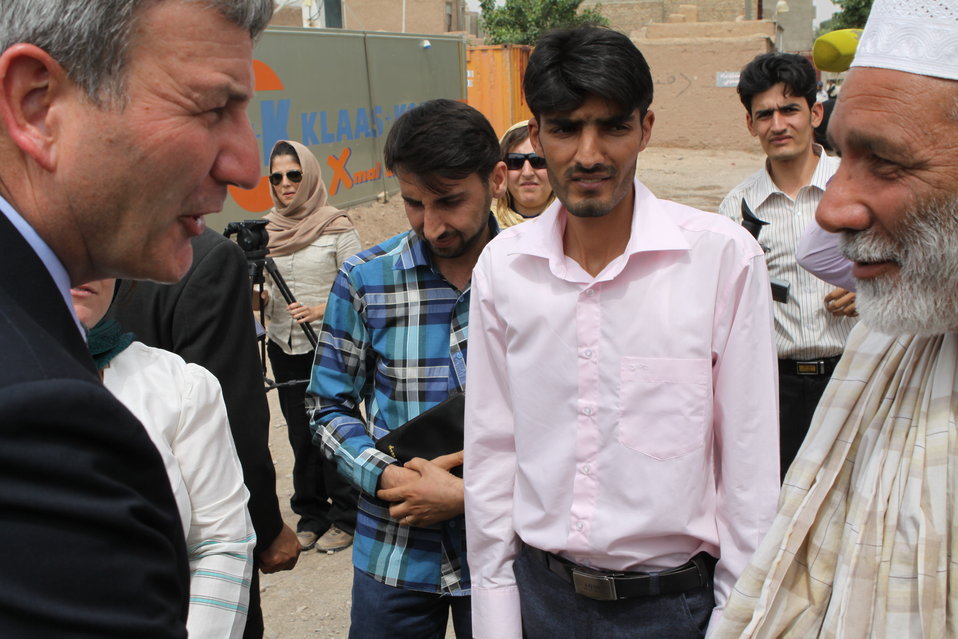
100525 Hirat Marble Conference 603